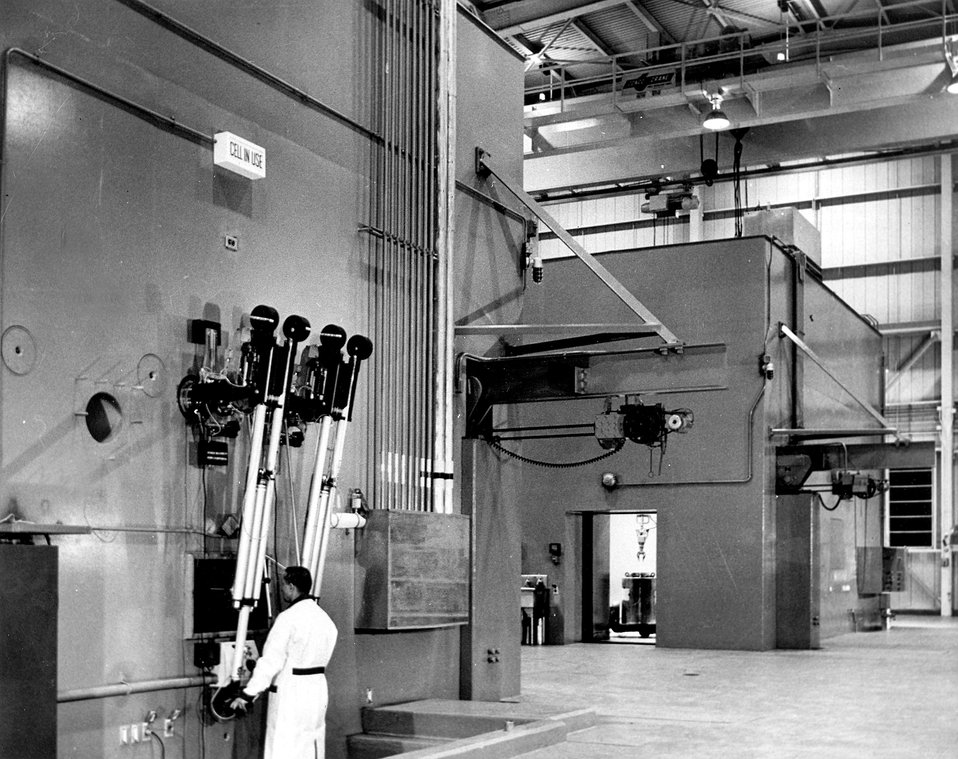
Remote control methods for moving and using highly radioactive sources have been adopted by industries having dangerous materials to handle.